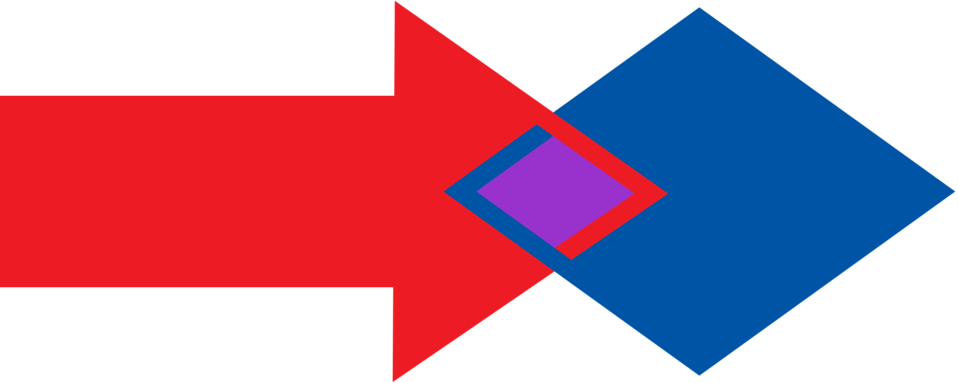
Merge-arrow